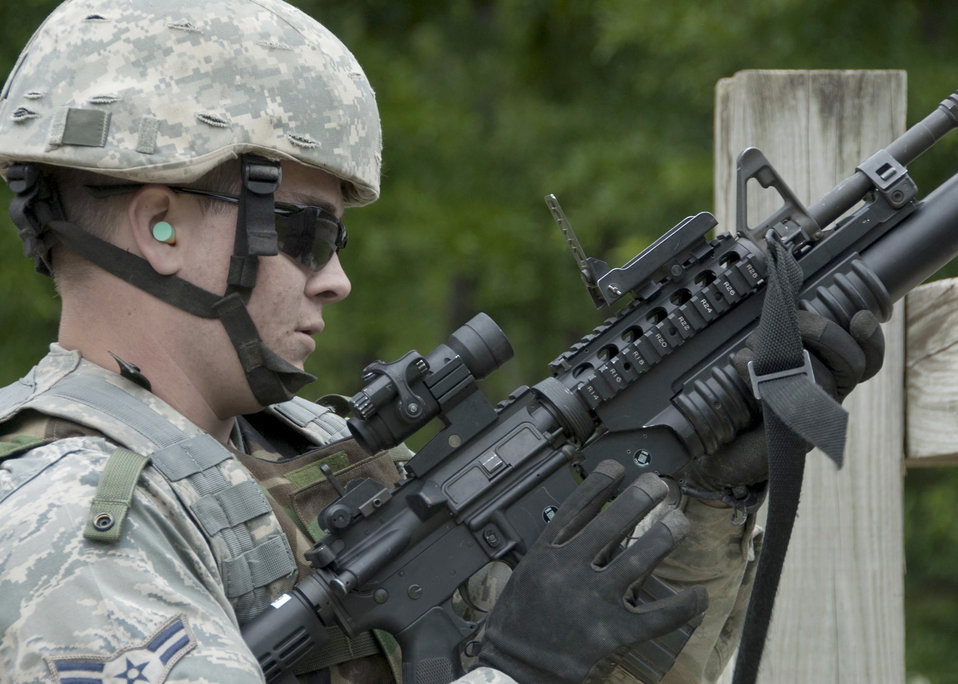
Heavy arms training

Airman 1st Class Kevin Clendenen trains with the M203 grenade launcher May 17, 2011, at Arnold Air Force Base, Tenn. Airman Clendenen is assigned to the 134th Security Forces Squadron.